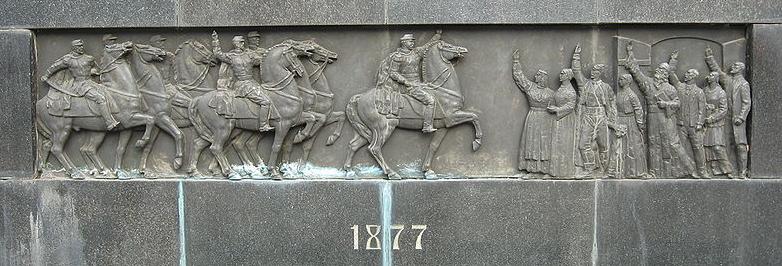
Српски / srpski: 1877. Ослобођење Ниша од Турака, рељеф на Споменику ослободиоцима Ниша. Слику са заједничке оставе преузео и прерадио МилеМД. 6.10.2010.